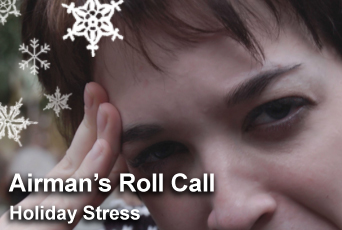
Airman's Roll Call

This week's Airman's Roll Call focuses on stress from family responsibilities, expectations, and meeting end-of-the-year deadlines during the holiday season.